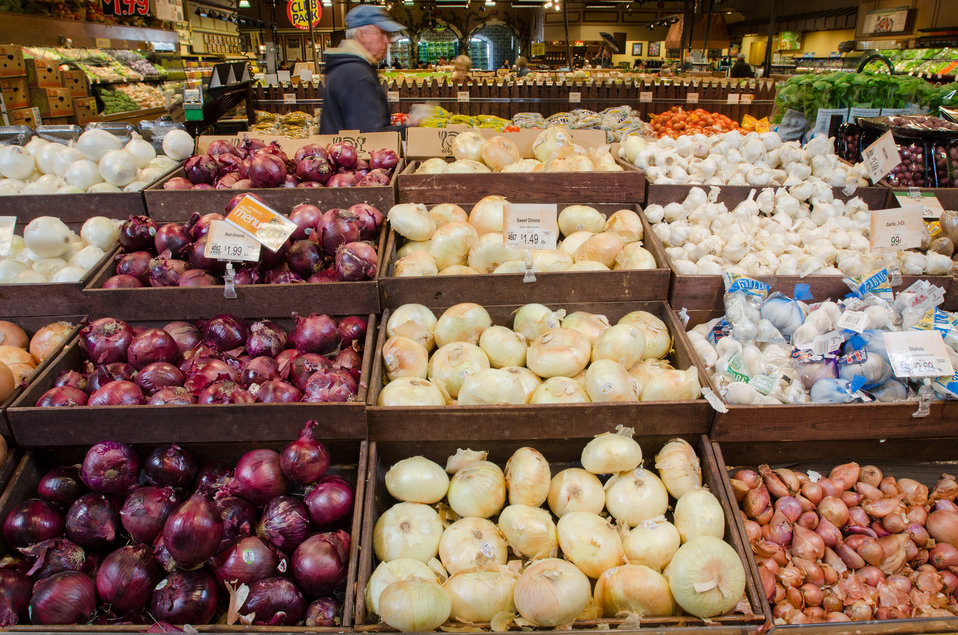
Onion and garlic produce at a grocery store in Fairfax, Virginia, on March 3, 2011.